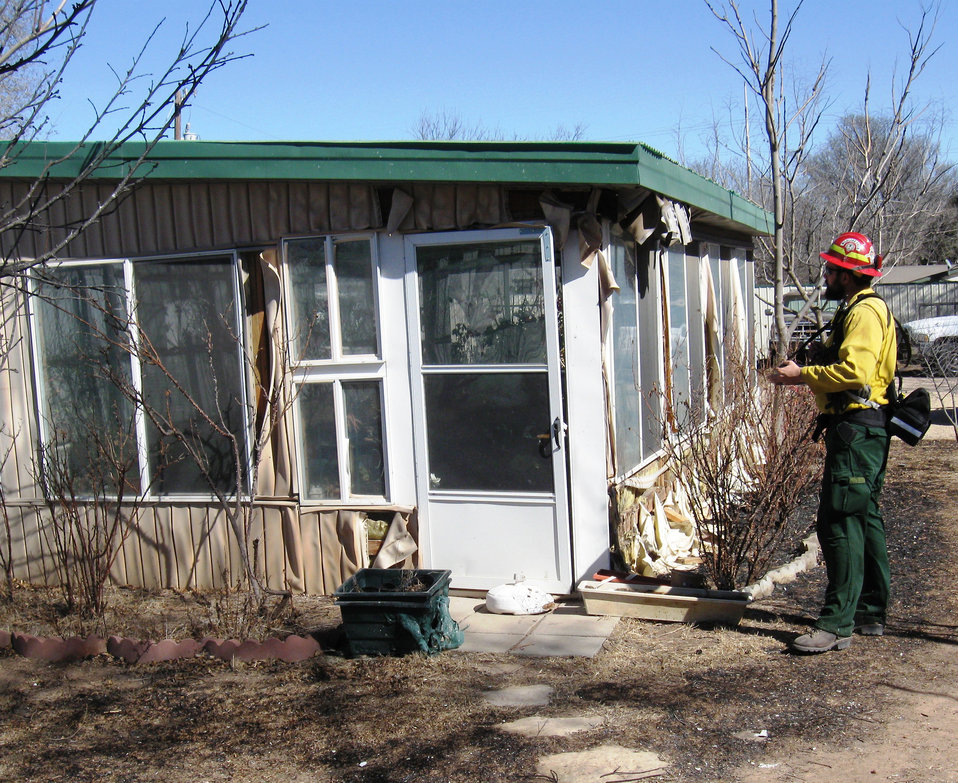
North Texas Wildfires

A member of a joint NIST-Texas Forest Service study team collects data on a Amarillo, Texas, building damaged by wildfires in February 2011.